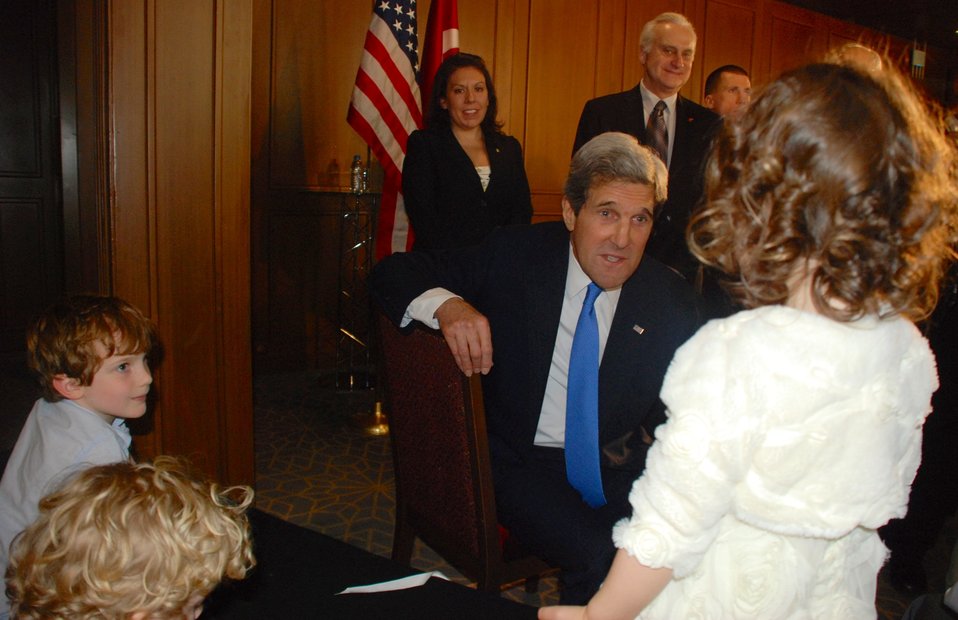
Secretary Kerry Meets With U.S. Mission Turkey Staff and Families

U.S. Secretary of State John Kerry meets with the staff and families of the U.S. Mission to Turkey in Istanbul, Turkey, April 7, 2013.